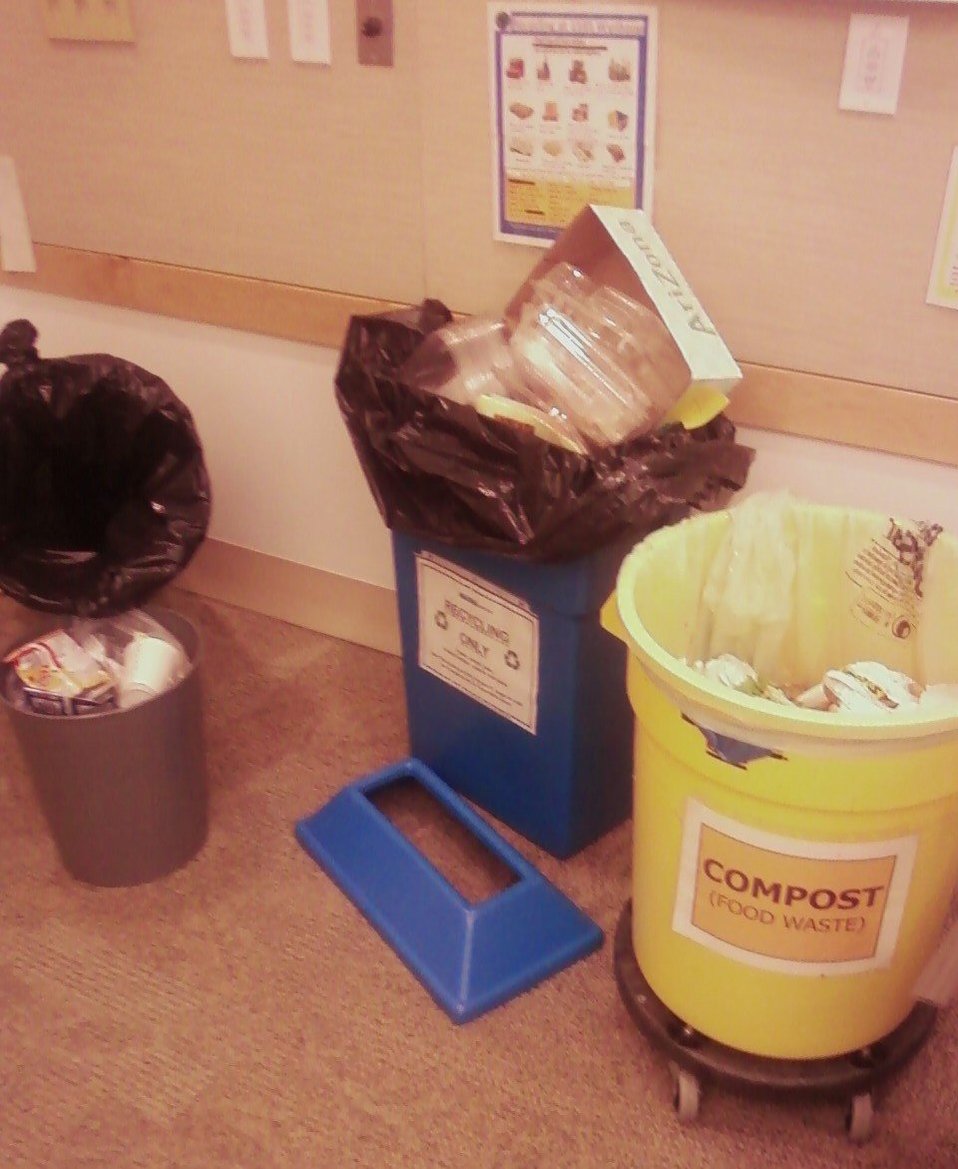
November 15, 2013 - Correctly sorted waste, Auraria Campus, Denver, CO

Materials were sorted to determine potential for improved waste diversion. Current practices (before resorting) produced a 62% diversion rate, while optimum diversion for the Student Union could reach 76% with proper sorting. This baseline measurement activity will help Auraria determine strategies for improving waste diversion in the Tivoli Student Union and reduce the amount of waste material sent to local landfills.